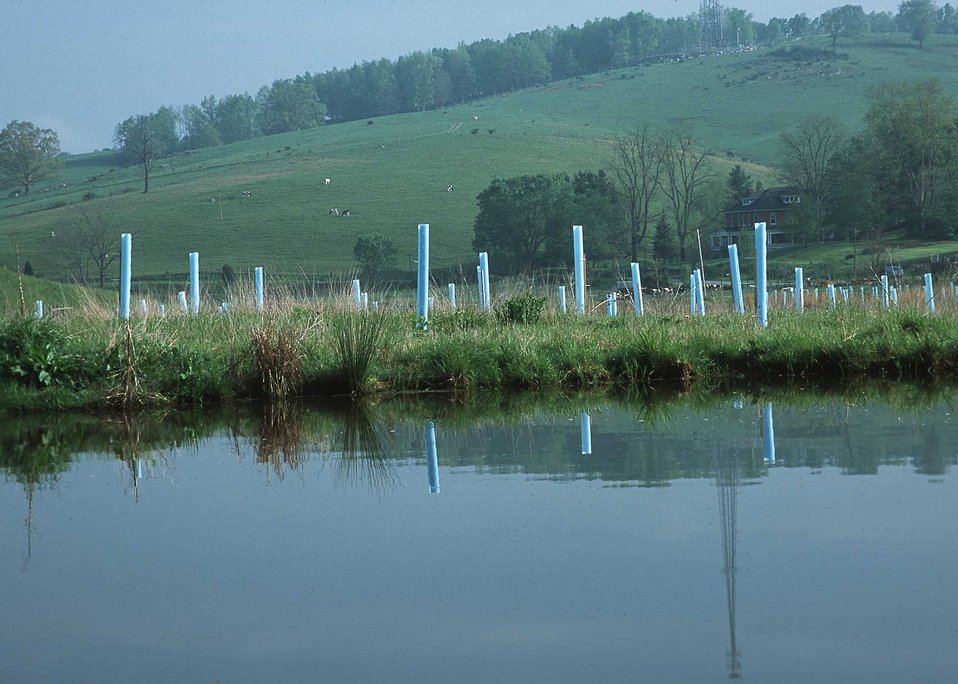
Wetland Reserve Program site showing tree planting and wetland restoration practices, Marion, Virginia.